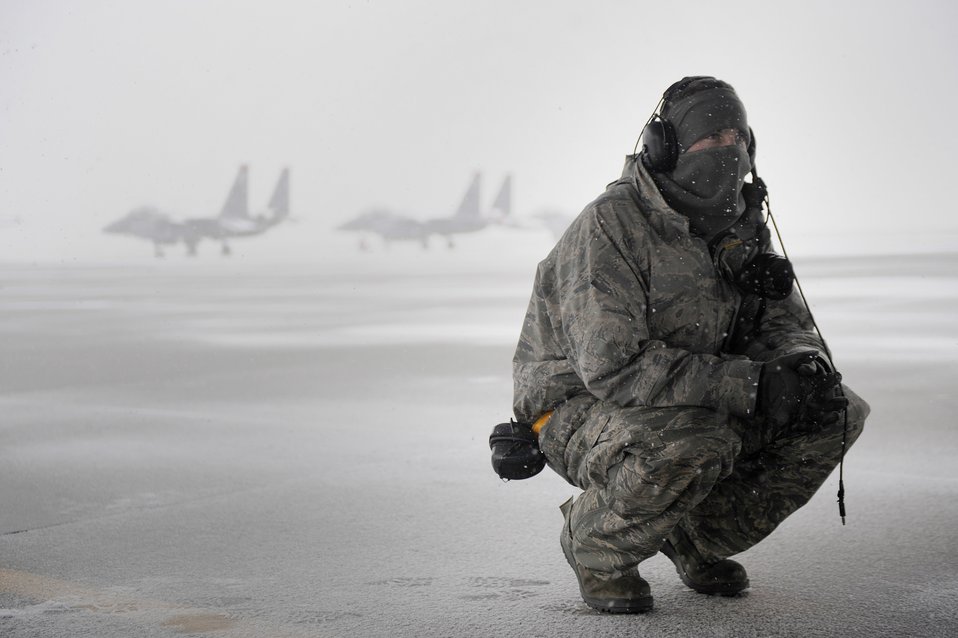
Airmen work under harsh weather conditions

Senior Airman Stephen Held takes a break during an exercise Nov. 21, 2010, on the flightline at Mountain Home Air Force Base, Idaho. Wing officials use operational readiness exercises to gauge the wing's ability to meet wartime taskings at a deployed location. The evaluation includes initial response, readiness, combat operations, ability to survive and operate, self aid and buddy care, and mission support. Airman Held is assigned to the 391st Fighter Squadron as a crew chief.